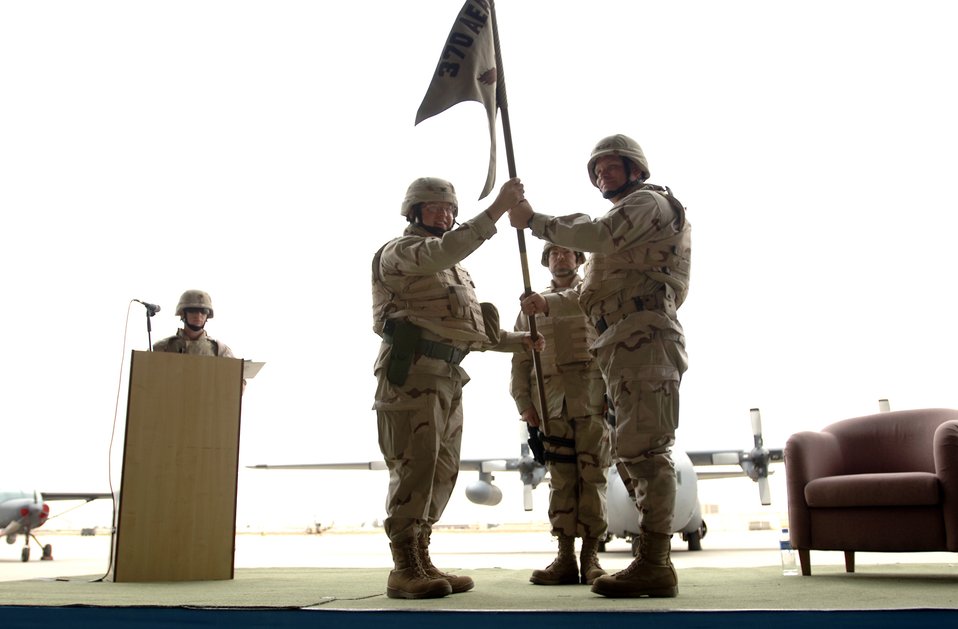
Operation Iraqi Freedom

Baghdad, Iraq -- Col. Daniel G. Groeschen presents the 370th Air Expeditionary Advisory Squadron Unit flag to Col. Mark J. Schmitz during the Assumption of Command Ceremony at New Al Muthana Air Base April 22.